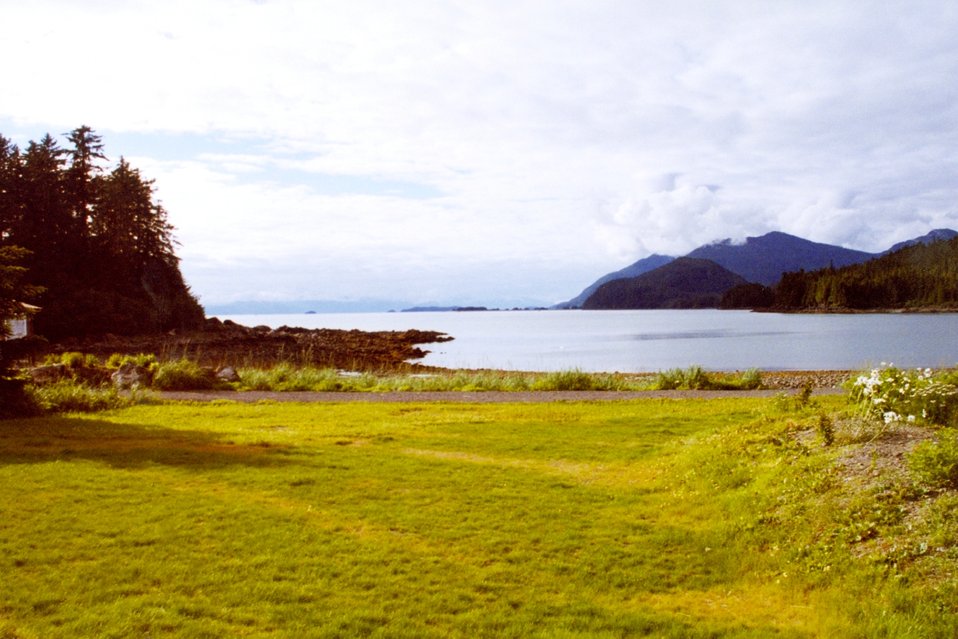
A placid bay in Southeast Alaska